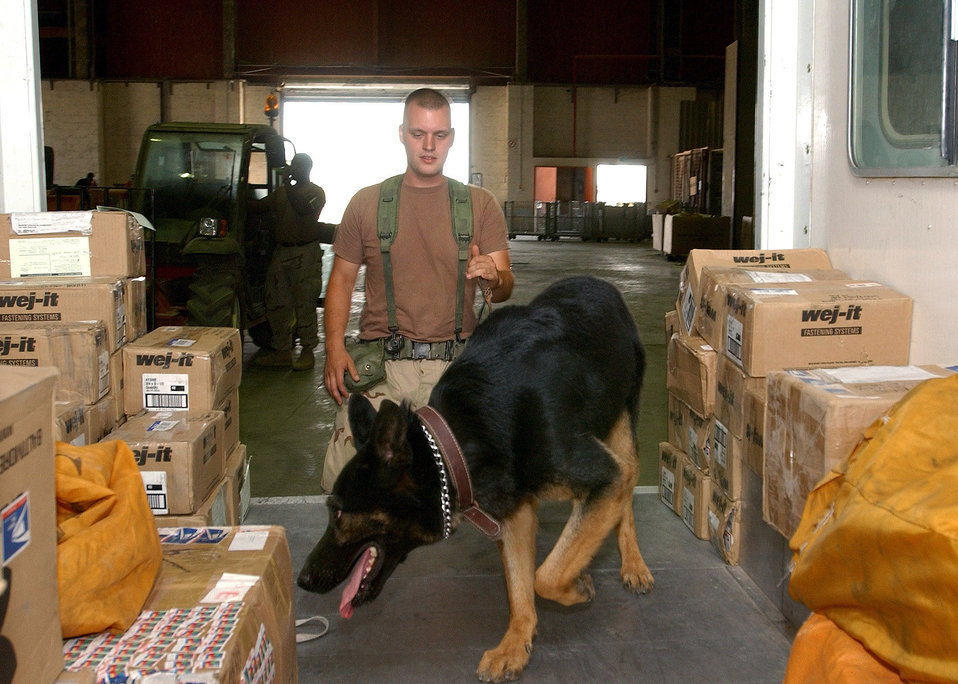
Checking the mail

BAGHDAD, Iraq -- Staff Sgt. Dan Hartley, 447th Expeditionary Security Forces Squadron military working dog handler, and military working dog, Cody, check for explosives among boxes of mail received at Baghdad International Airport. They are one of several military working dog teams here supporting Operation Iraqi Freedom. Hartley and Cody are both deployed from the 66th Security Forces Squadron at Hanscom Air Force Base, Mass.